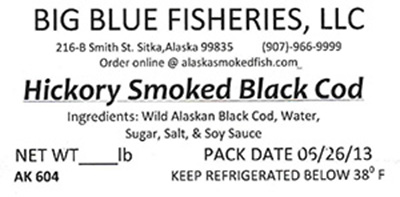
RECALLED – Salmon, Cod

September 30, 2013 – Product Recall – Big Blue Fisheries, Llc Recalls All Smoked Products From All Lots, Various Sizes, in Vacuum Packaging Because of Possible Health Risk.